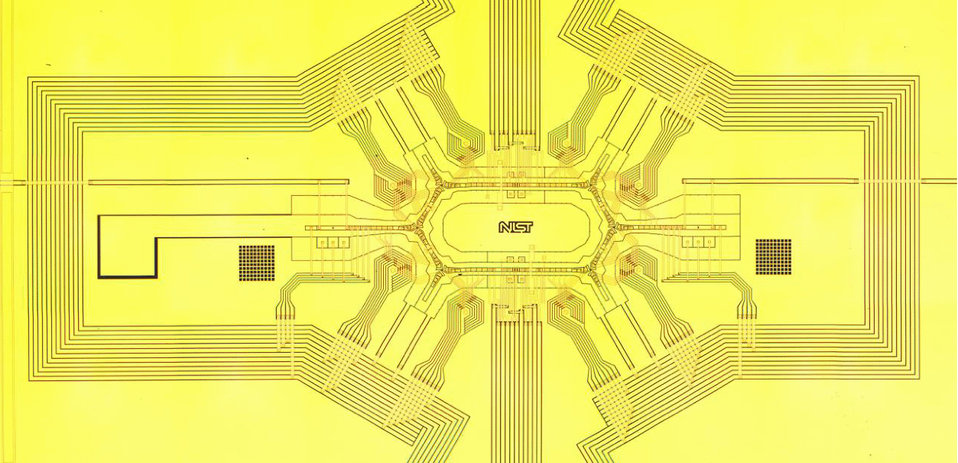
Ion Trap

Photograph of NIST racetrack ion trap under development as possible hardware for a future quantum computer. The 150 zones for storing, transporting and probing ions (electrically charged atoms) are located in the center ring structure and the six channels radiating out from its edges.